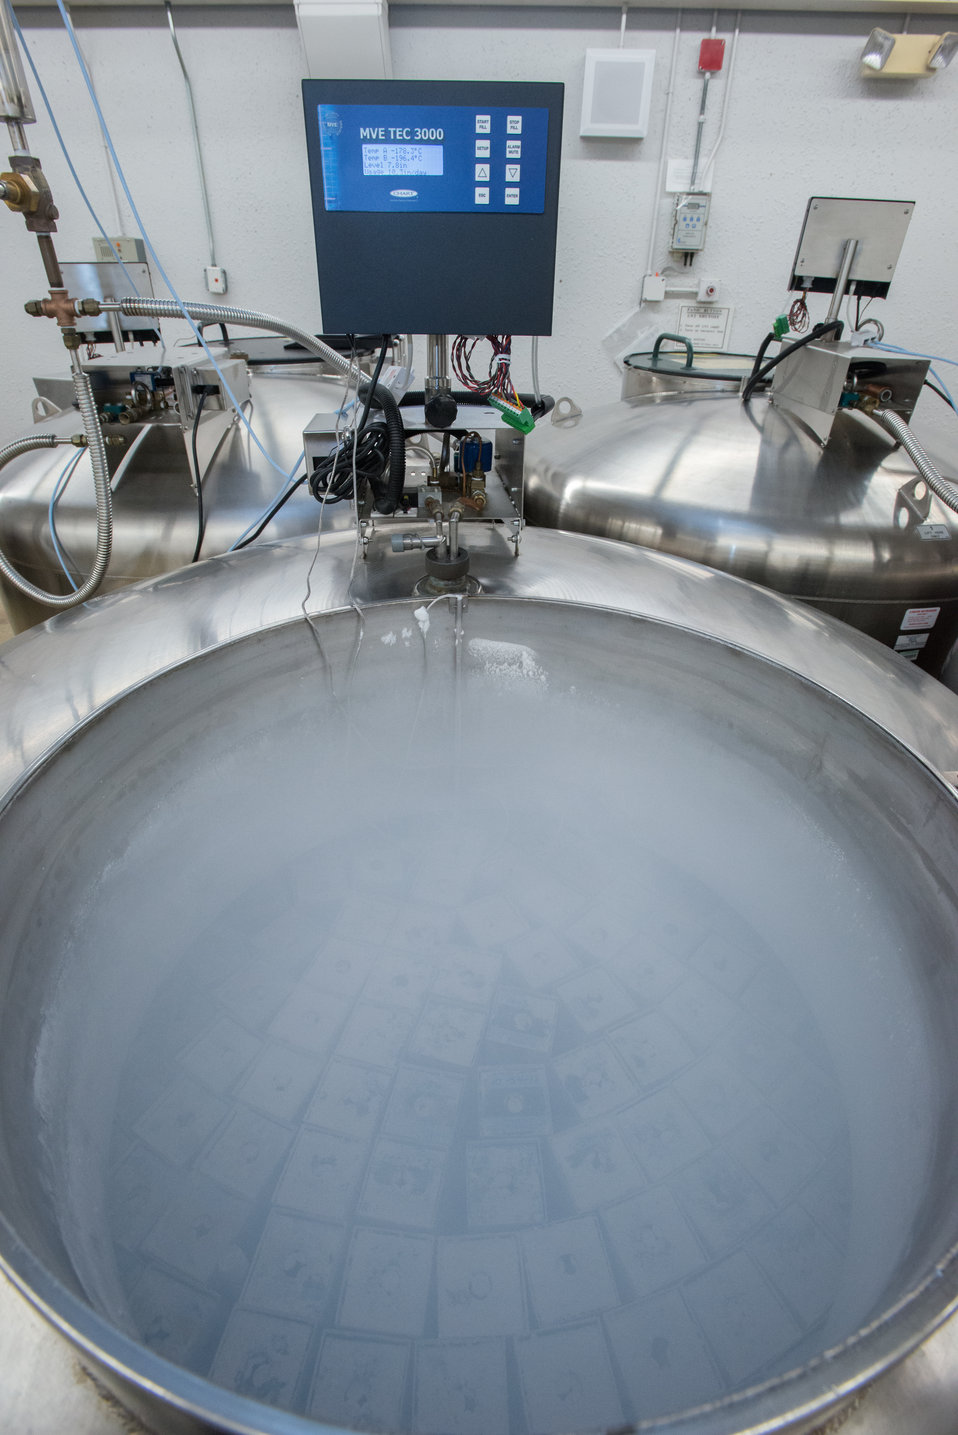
Nitrogen vapor in a cryogenic storage tank keeps seeds cold and stable at the U.S. Department of Agriculture's (USDA) Agriculture Research Service (ARS) National Center for Genetic Resources Preservation (NCGRP) in Ft. Collins, CO on Wednesday, Nov. 6, 2013. The Cryogenic Storage Vault currently operates more than 45 cryogenic tanks that hold animal germplasm, plant tissue culture, and seeds that are stored at -196 °C (-321 °F) in liquid nitrogen storage or to -193 °C (-315 °F) in nitrogen vapor storage. NCGRP is the largest agricultural gene bank facility in the U.S. The NCGRP staff conduct groundbreaking research to develop efficient and effective means for preserving plant and animal germplasm.